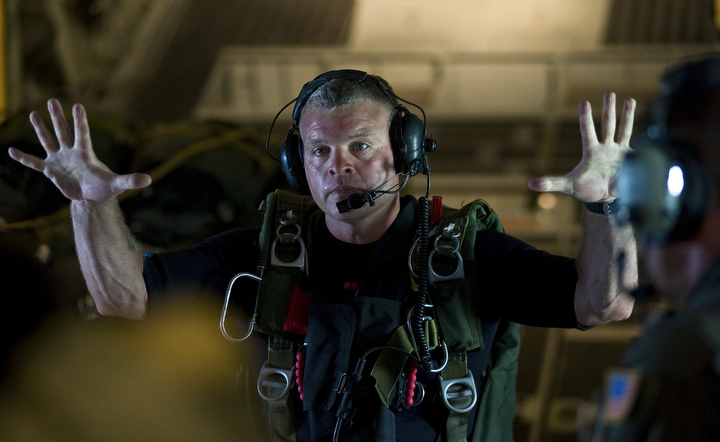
Operation Southern Partner

Pararescueman and jump master Senior Master Sgt. Michael Fleming signals a ten-minute warning to a team that will be demonstrating a rigged alternate method zodiac, or RAMZ, capability jump into the Caribbean Ocean June 9 for members of the Belize National Coast Guard and local media during Operation Southern Partner.